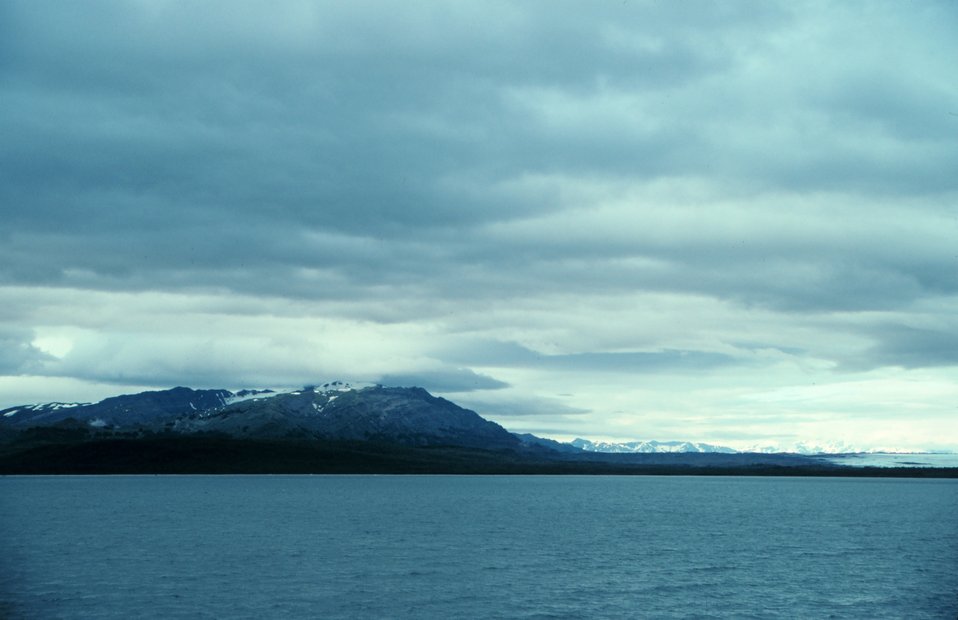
Offshore of Icy Bay. A portion of Malaspina Glacier is seen to the right in the image.